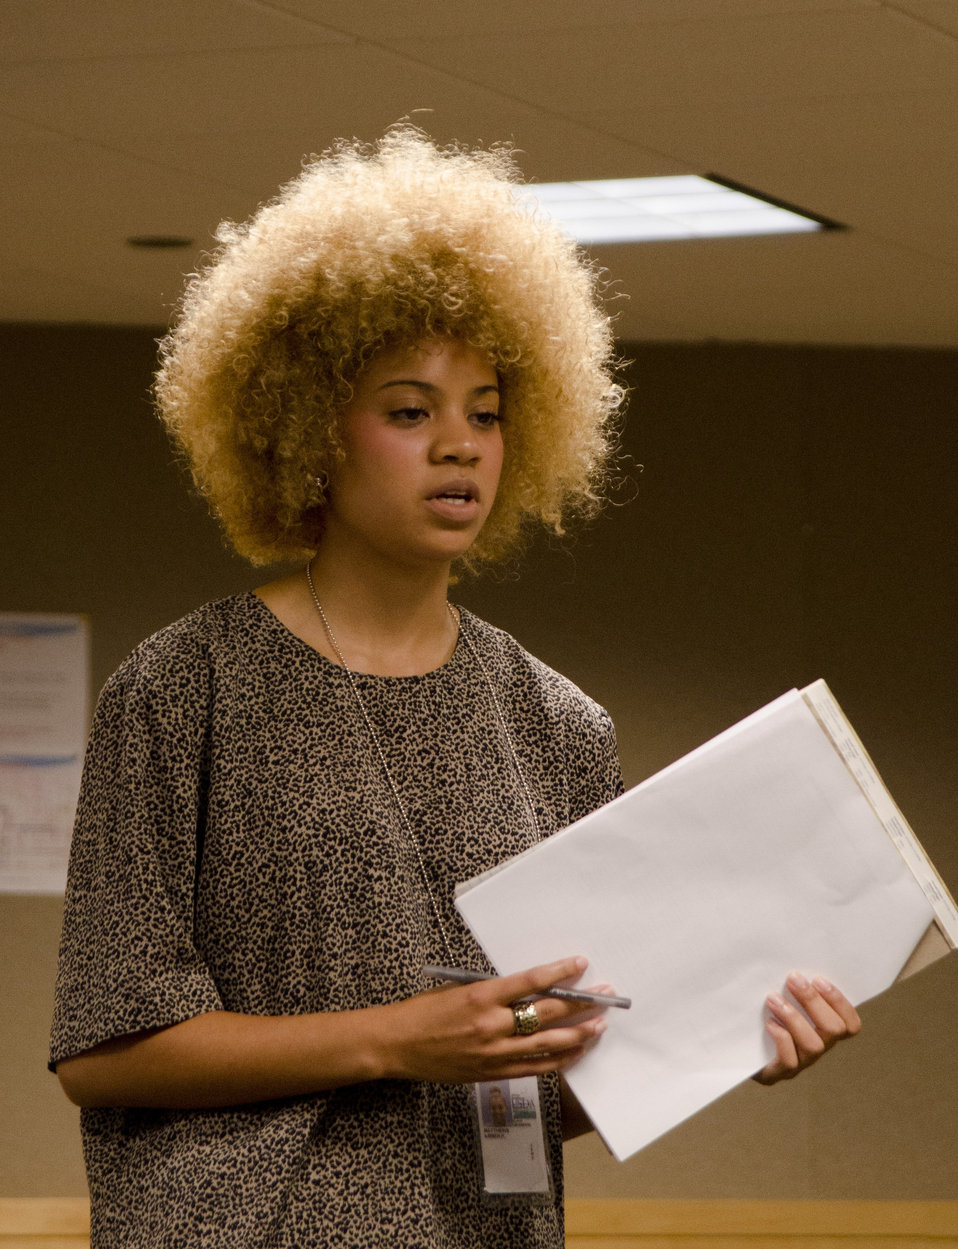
U.S. Department of Agriculture (USDA) Departmental Management (DM) intern Amber Mathews makes remarks for her group at the USDA Internship Program Listening Session held in USDA’s South Building in Washington, D.C. on Monday, August 7, 2012. The purpose of the USDA Internship Program Listening Session is to provide interns with a forum to express their views about their experiences as a USDA intern. These young people will be among the most promising future USDA leaders and participate in an individual discussion and group session that will develop leadership skills.